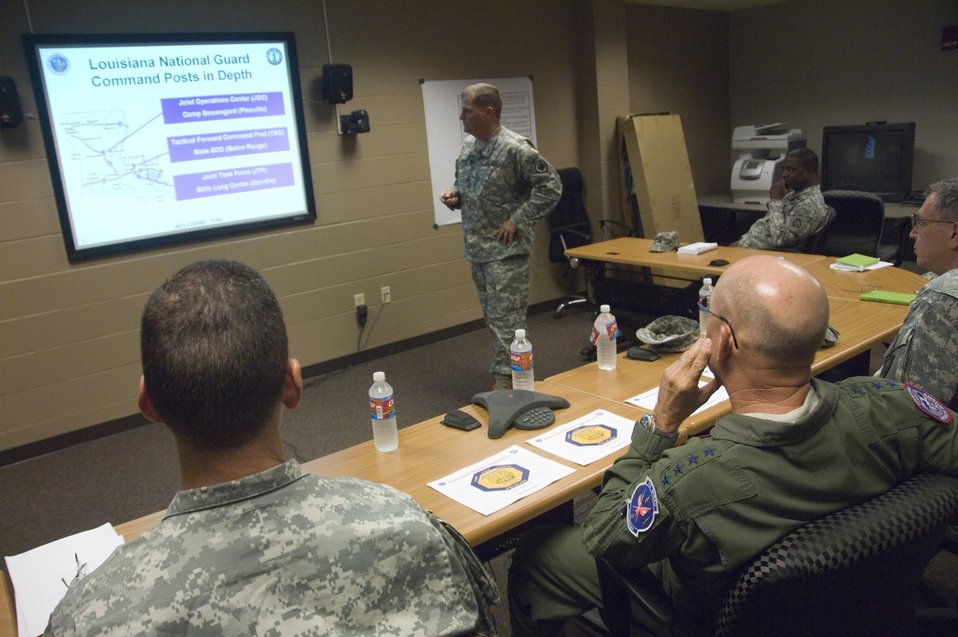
NORTHCOM commander praises Gustav preparations

Brig. Gen. Glenn Curtis, standing, commander of Joint Task Force Pelican, briefs Gen. Gene Renuart, commander of U.S. Northern Command, on the status of National Guard assets supporting Hurricane Gustav recovery efforts Sept. 3. JTF Pelican headquarters are located in Carsville, La.